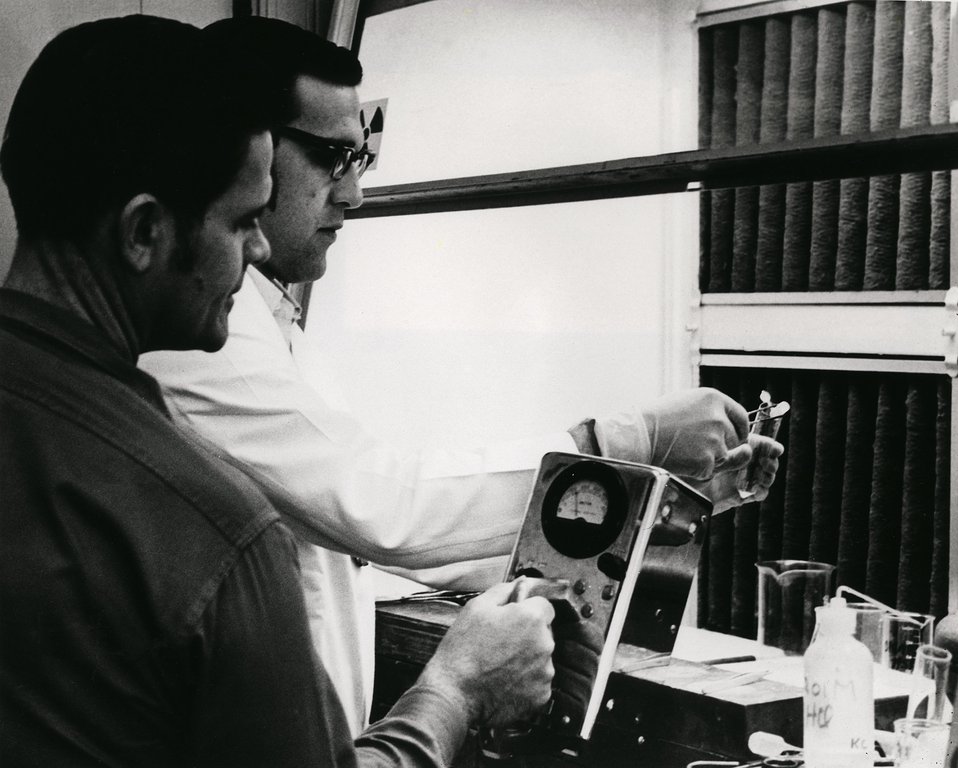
A scientist at Argonne prepares a fish specimen, which has been irradiated in a nuclear reactor, for analysis.
c.1970